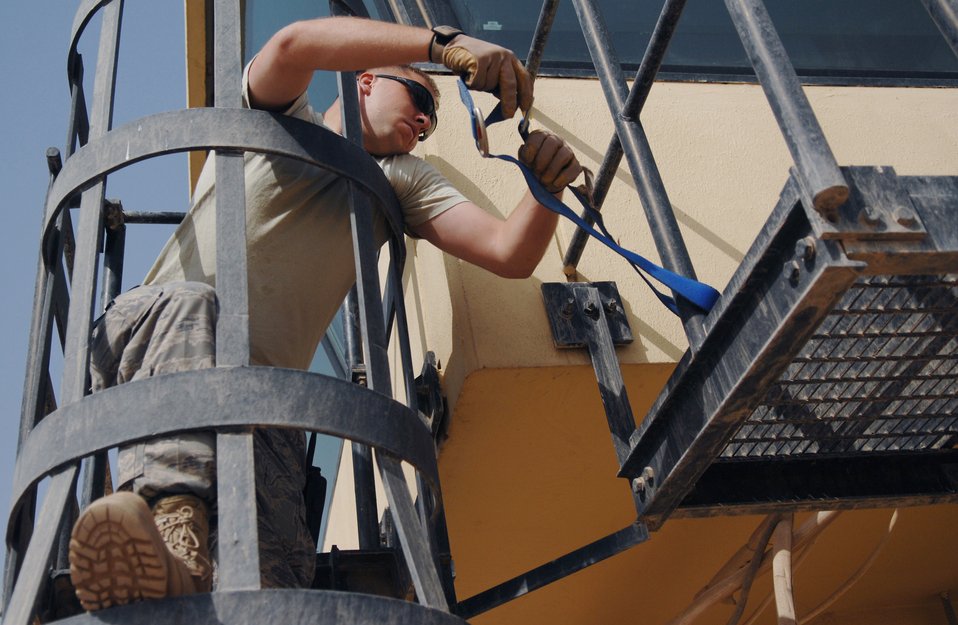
Balad firefighters rappel tower

Airman 1st Class Wesley Stegmaier fastens a safety harness before rappelling training at the control tower Aug. 20, 2009, at Joint Base Balad, Iraq. The training was a refresher and introductory course that allowed the firefighters to practice knots, anchors and belay techniques. Airman Stegmaier is a firefighter with the Air Force Reserve Command's 442nd Expeditionary Civil Engineer Squadron.